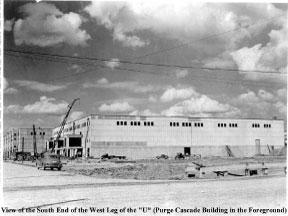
K-25 Building

The west wing of the K-25 Building, located under Oakridge, TN, was constructed in 1943 as part of the Manhattan Project.